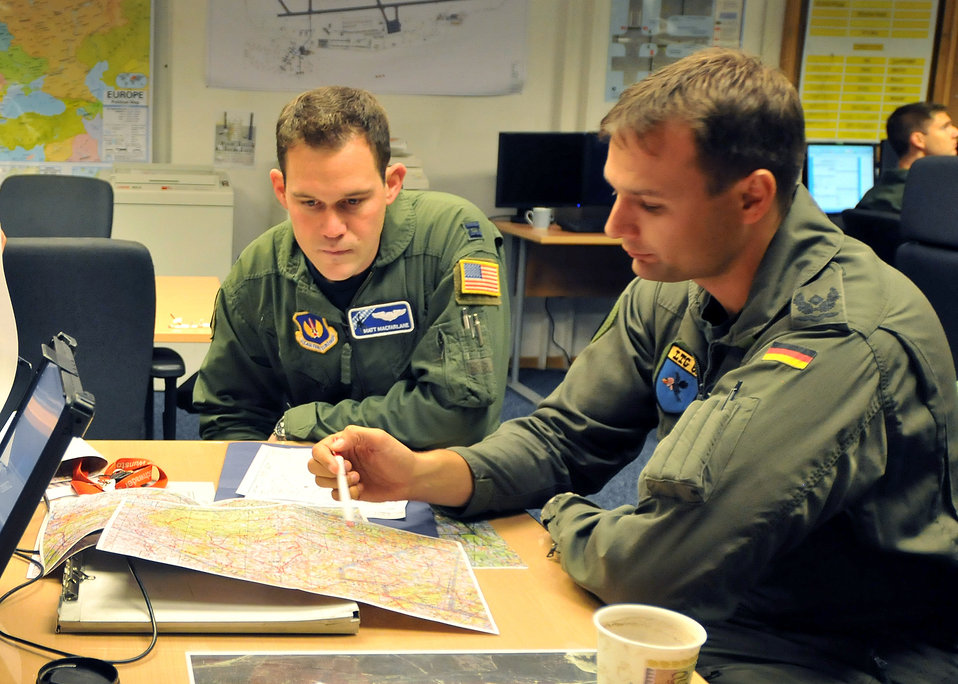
Ramstein Airmen host German counterparts

Capt. Matt Macfarlane (left) and German air force Maj. Stefan Schipke plan a joint training mission Oct. 28, 2010, at Ramstein Air Base, Germany. Eleven German aircrew members and two C-160 Transall aircraft spent a week training with the 37th AS members Oct. 25 through 29. Captain Macfarlane is a 37th AS tactics officer and Major Schipke is a Lufttransportgeschwader 62 squadron leader.